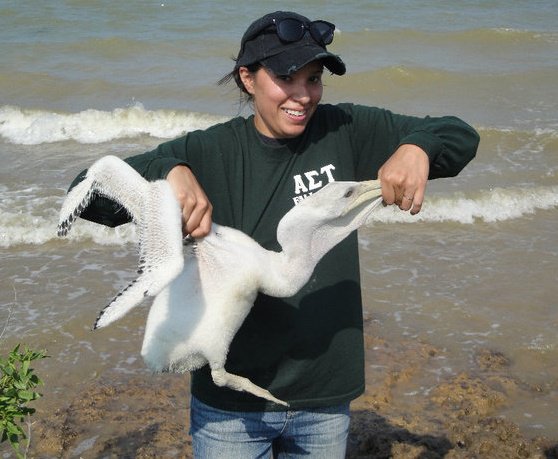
Pelican banding

U.S. Fish and Wildlife Service